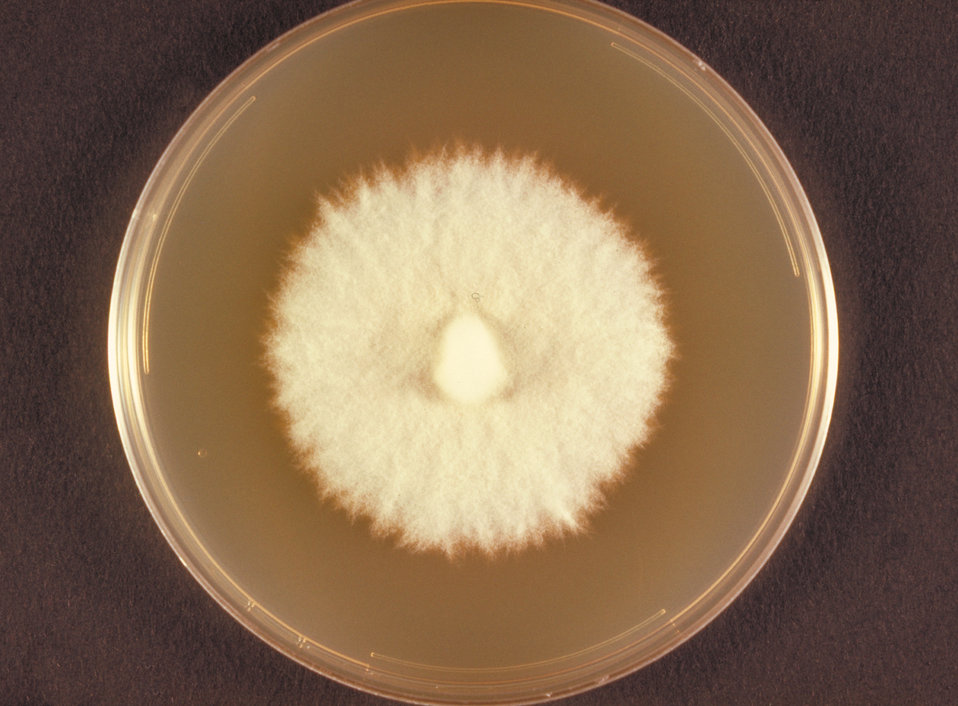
This is a top view of a Sabouraud's dextrose agar plate culture growing Microsporum persicolor.